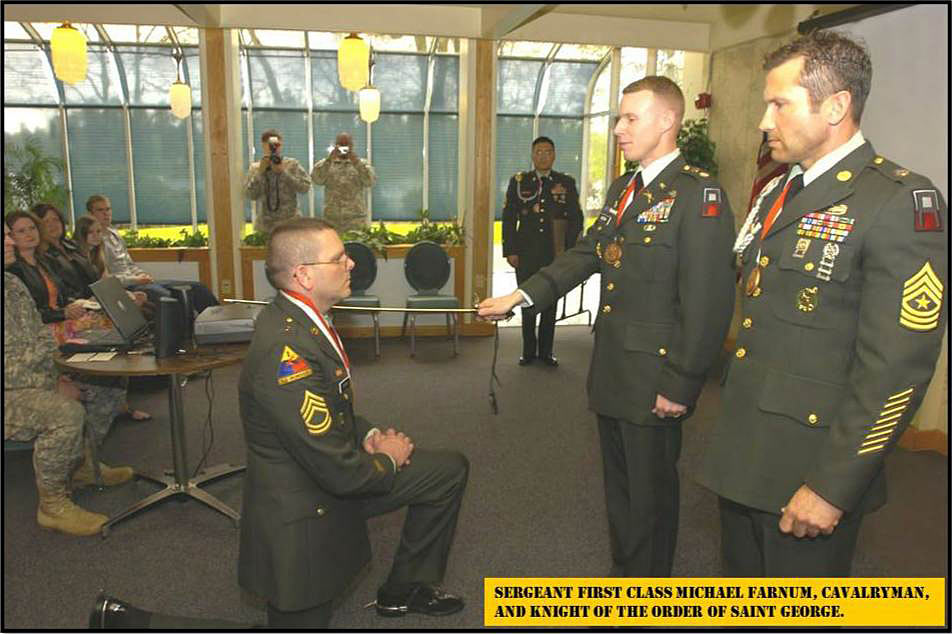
Michael Farnum-Pacific Region

Michael Farnum, a Biologist with the Washington Fish & Wildlife Office in Lacey, Washington, was knighted in the Order of Saint George, a top honor for U.S. Mounted troops. Michael was a U.S. Army Cavalryman for 23 years, a reconnaissance soldier and drill sergeant. He fought in the first and second Gulf Wars, and retired in 2007.